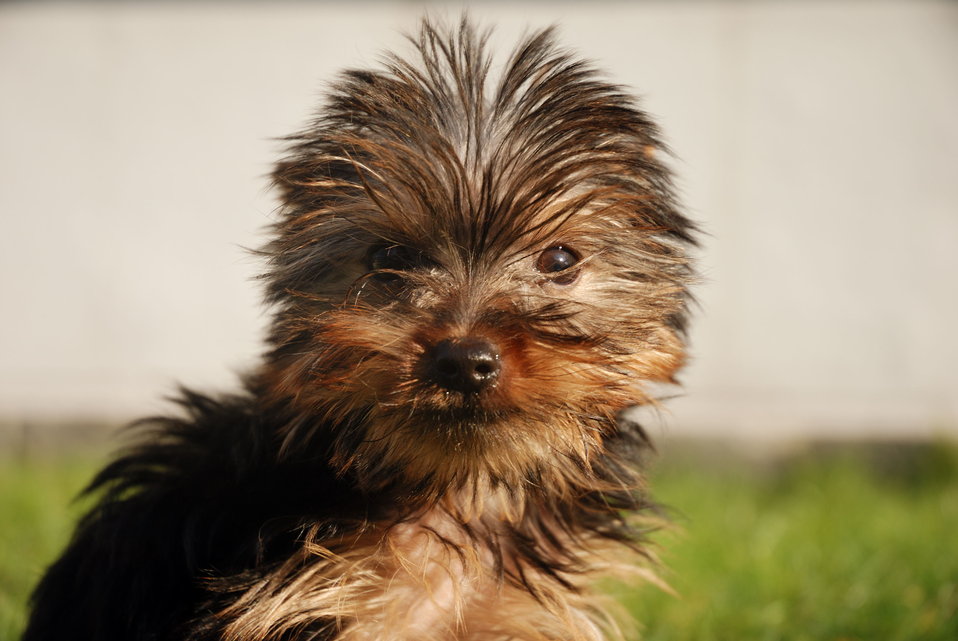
Italiano: Yorkshire Terrier.